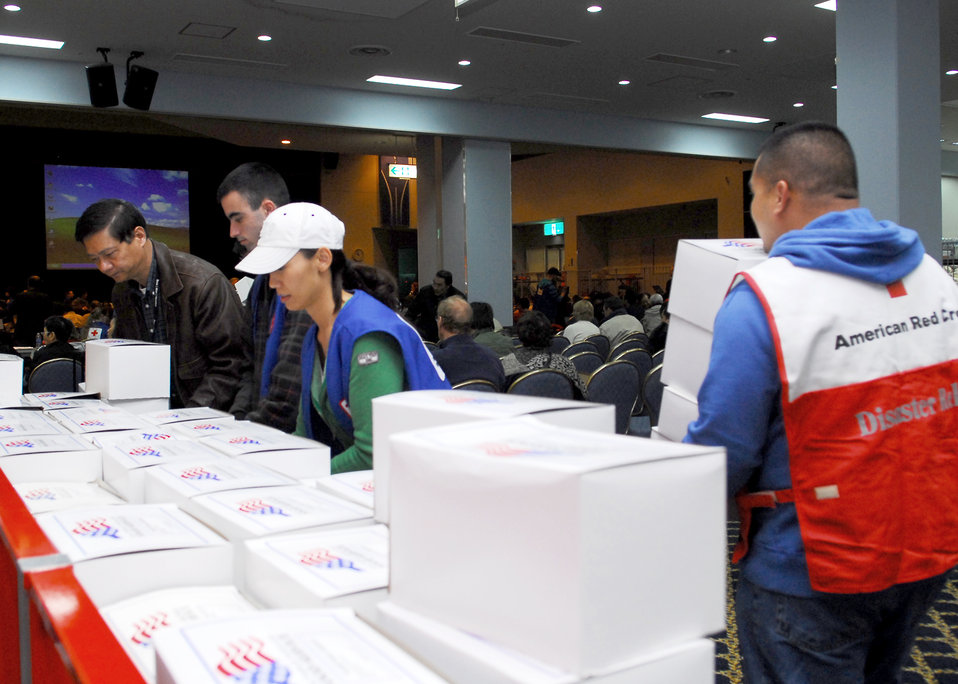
Taking shelter

American Red Cross volunteers prepare to distribute boxed meals March 11, 2011, at Yokota Air Base, Japan. The meals were provided by officials from the 374th Force Support Squadron for passengers of aircraft diverted from Narita International Airport in Tokyo, due to an 8.9-magnitude earthquake.